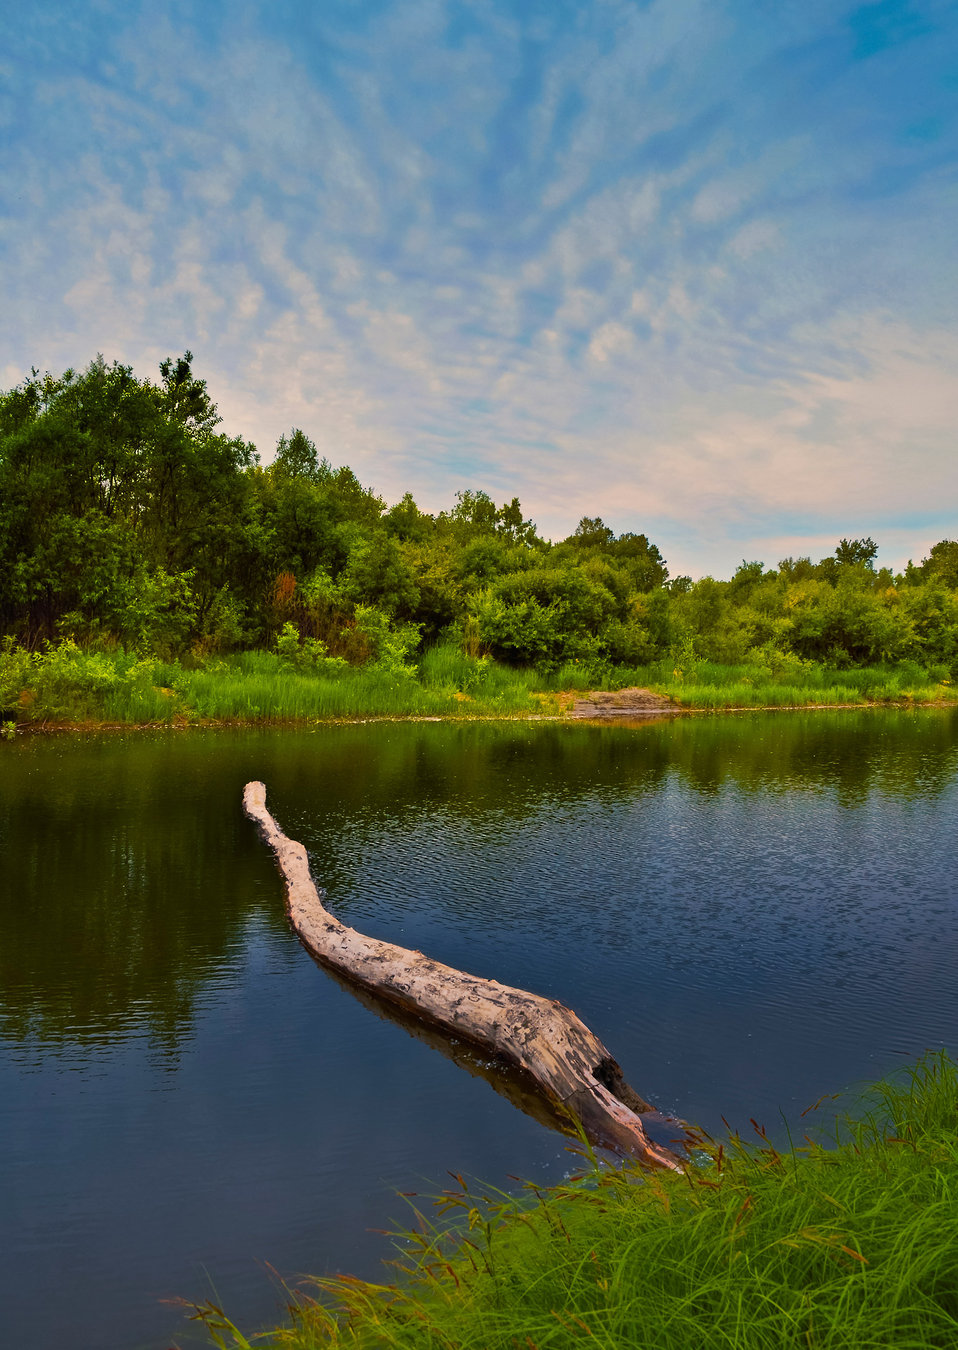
The log in the water

The old logs lie in the water of the river.